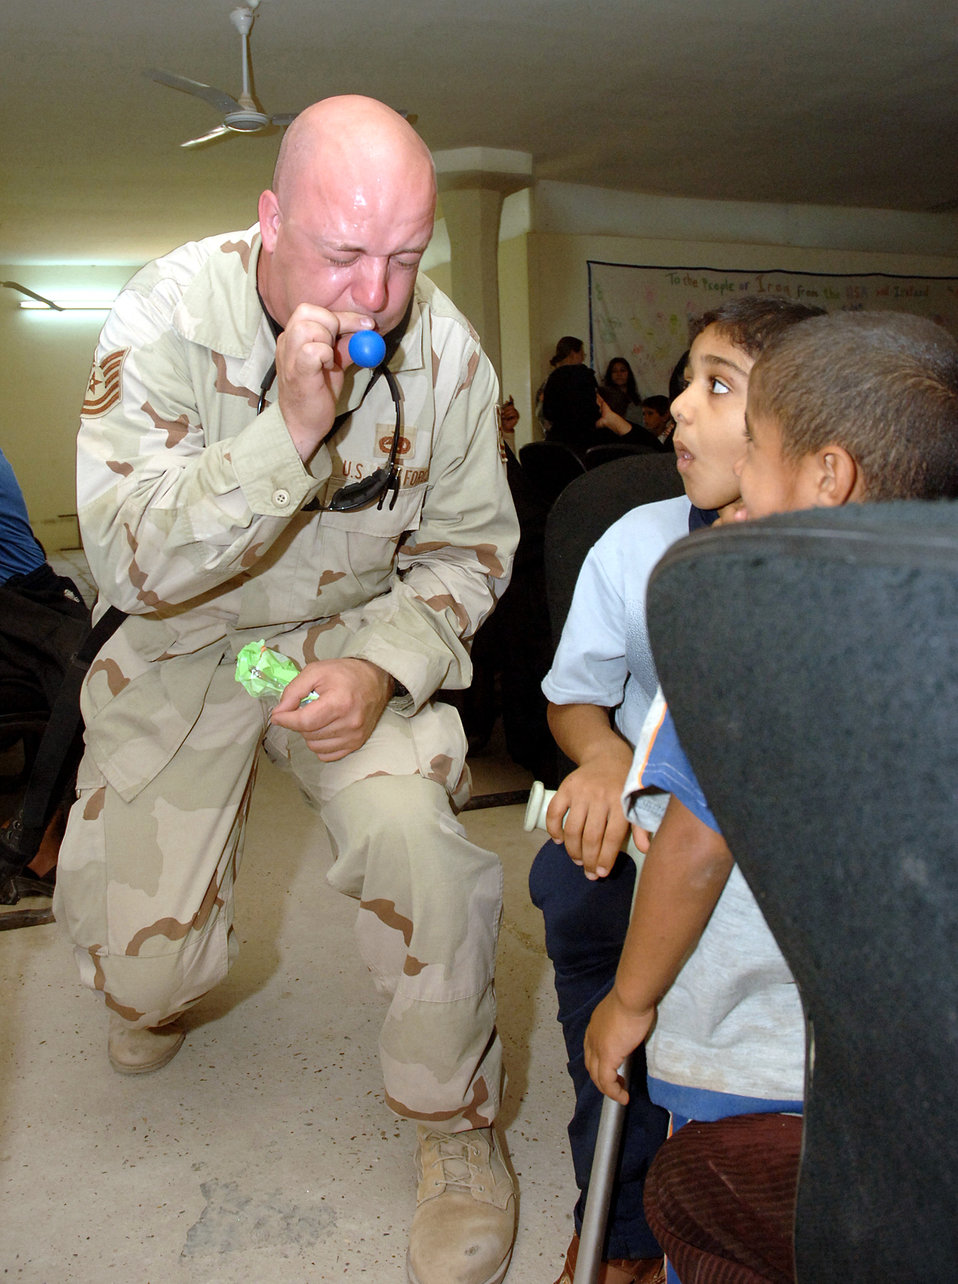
Airmen pitch in for worthy cause in Iraq

Tech. Sgt. John Carpenter blows up balloons for two Iraqi boys at the Army's Civil Military Operations Center at the Radwinya Palace Complex near Sather Air Base, Iraq, on Saturday, June 3, 2006. Sergeant Carpenter is with the Coalition Military Assistance Transition Team at New Al Muthana Iraqi air base, training Iraqi airmen.